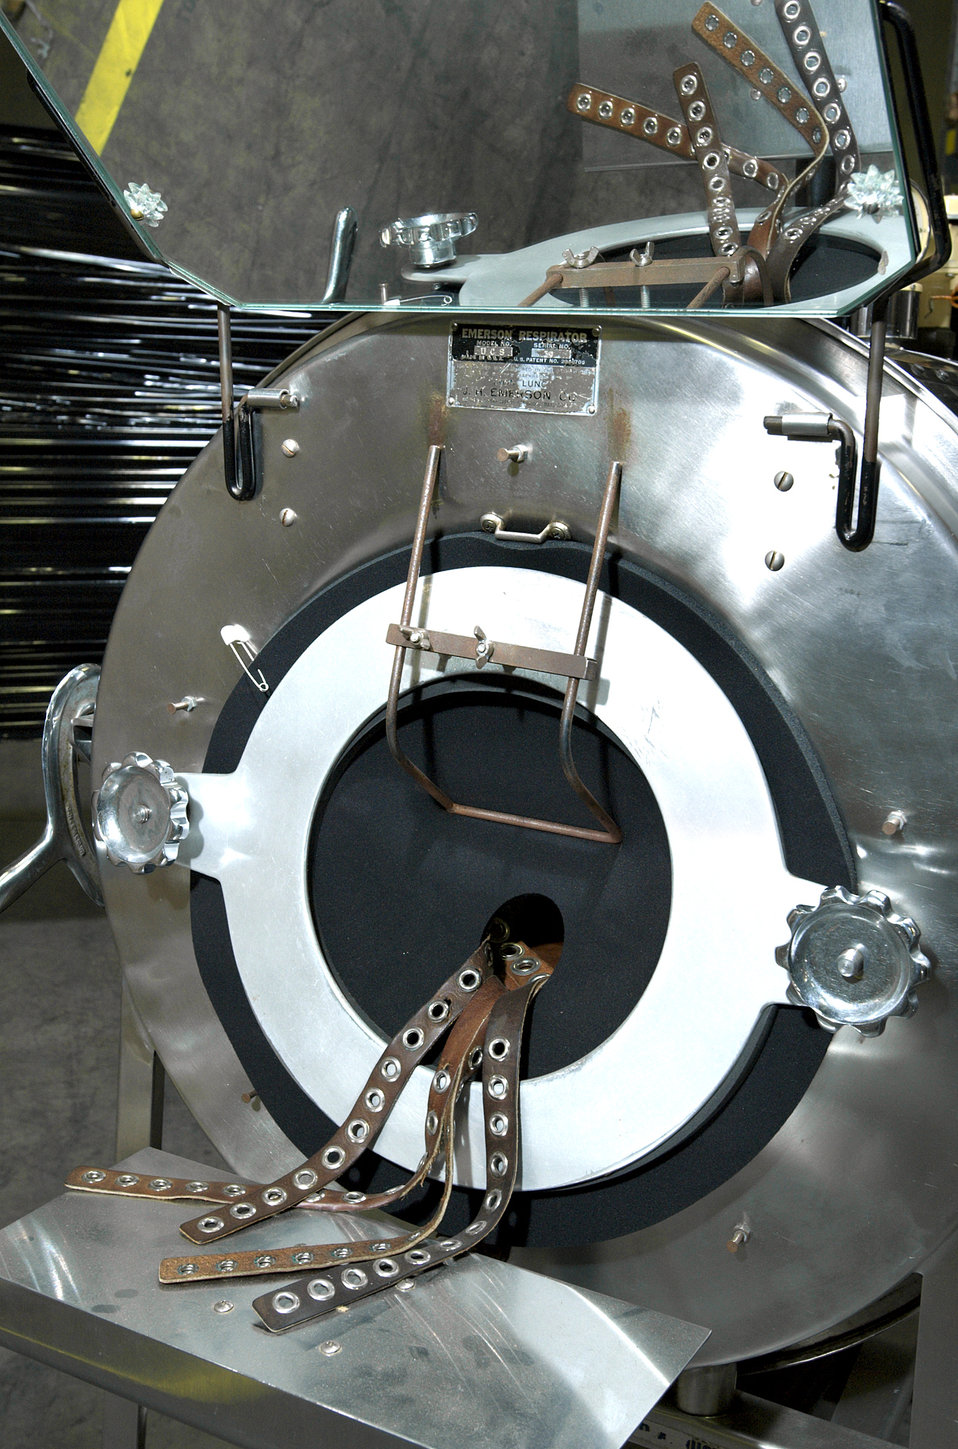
This photograph shows the front view of an Emerson Respirator known as an 'iron lung.' Devices such as these were used by polio patients whose ability to breath was paralyzed due to this crippling viral disease.